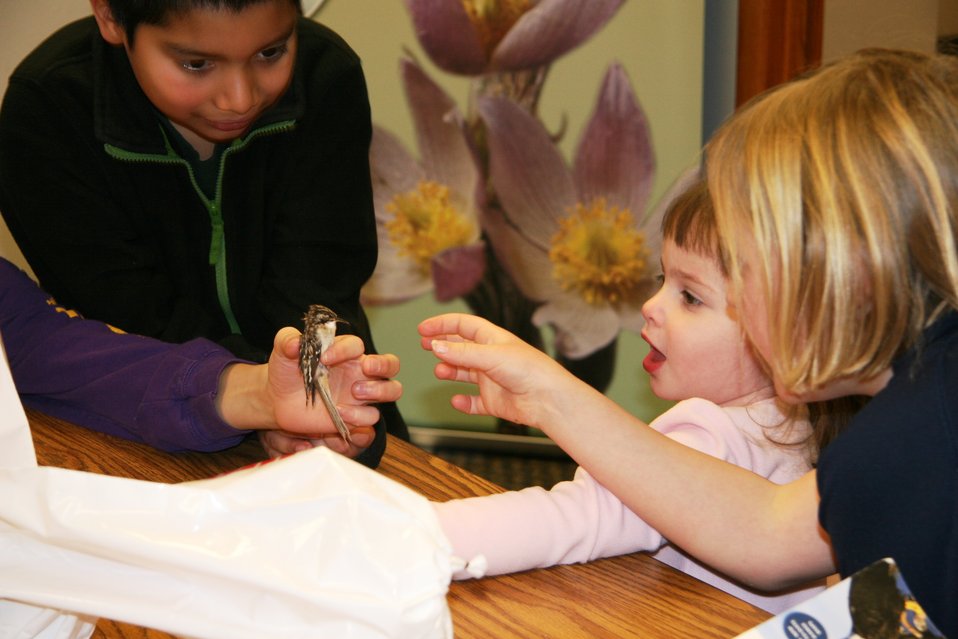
Up Close with a Brown Creeper

Checking out a museum specimen of a brown creeper is a great hands-on way to examine bird characteristics and adpatations up close.